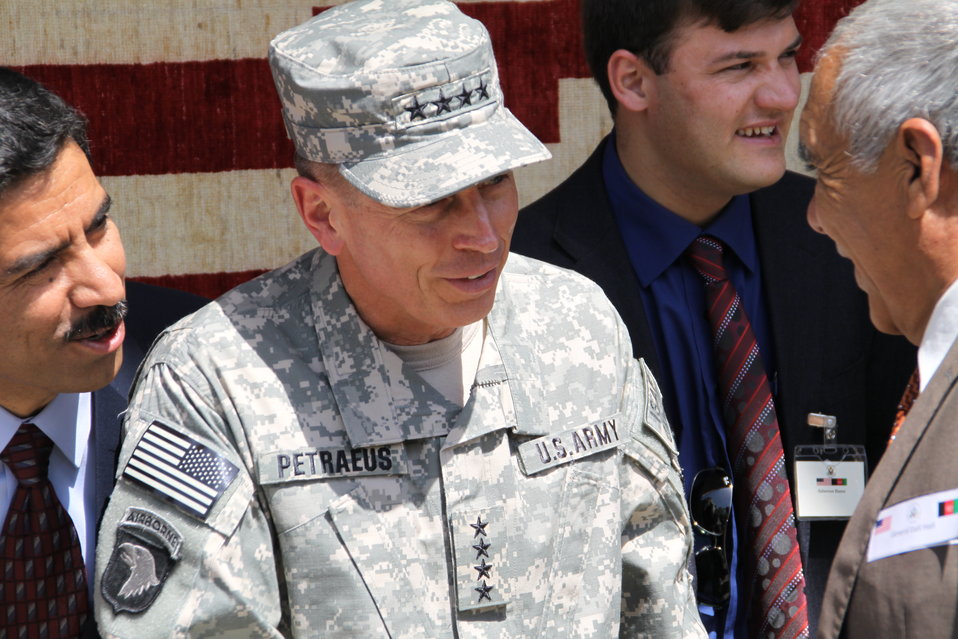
Kabul Official July 4th Celebration